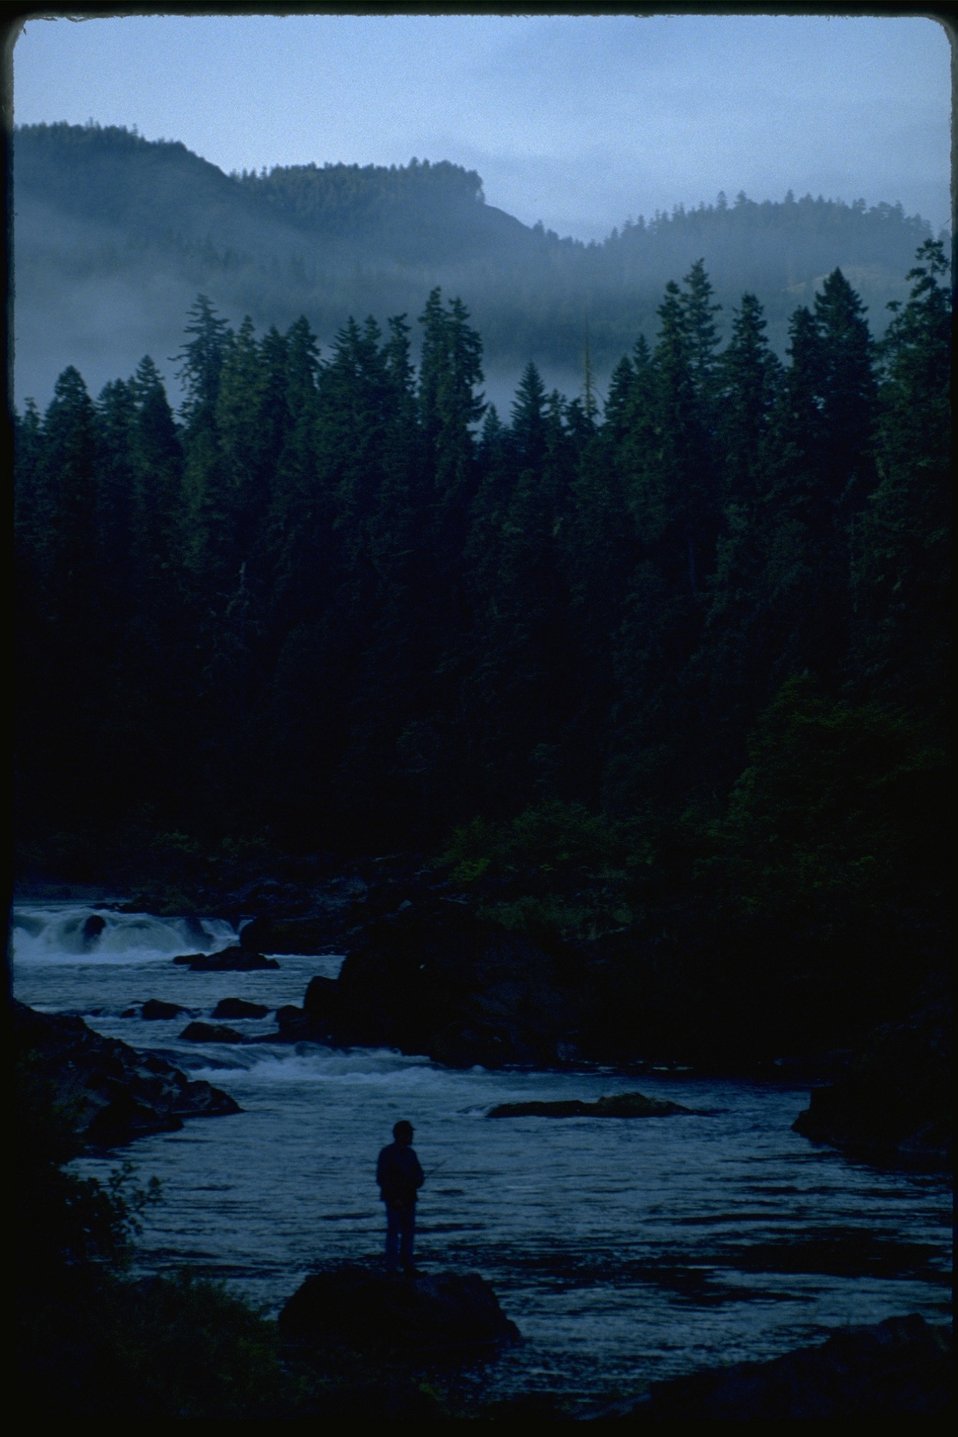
Scenic shot of man standing along a river in the early morning or late evening.